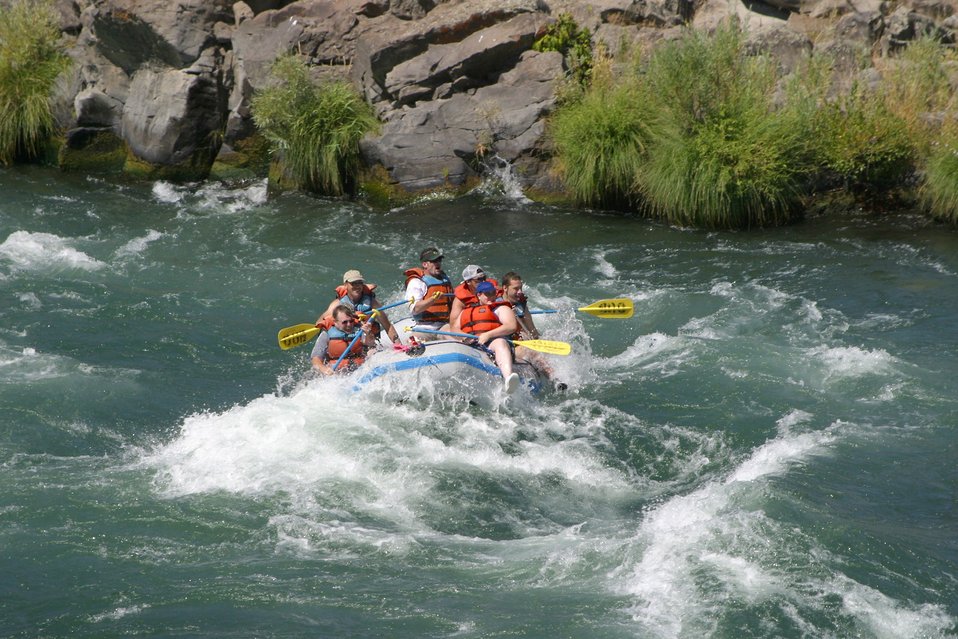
Wapinitia Rapids class III, has large roller coaster waves. 7/26/03 Pelton Dam 3600 cfs: Moody Rapids 4300 cfs.